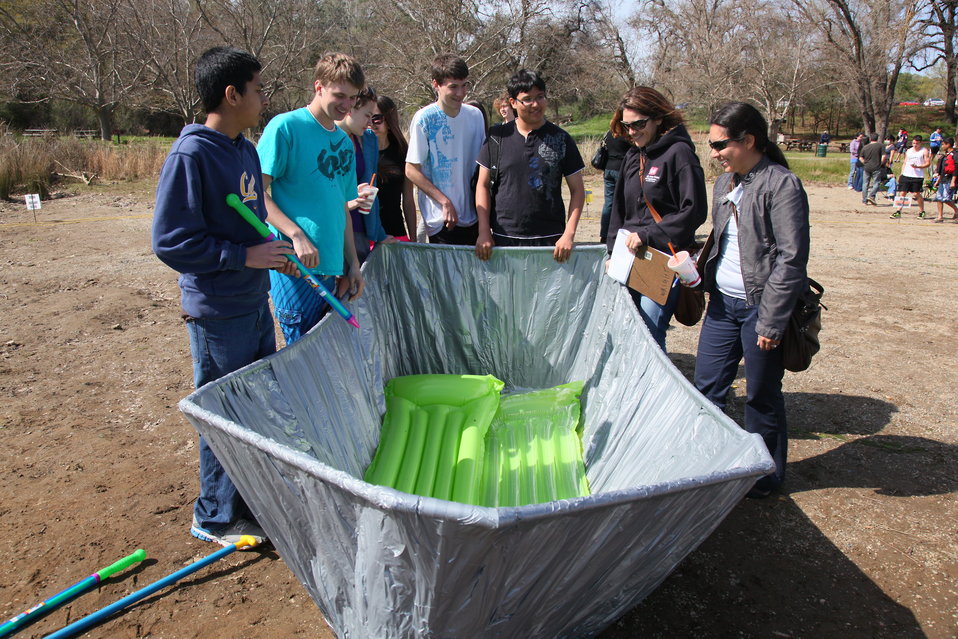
Judging boat regatta entrants for design and construction

Fiorella Fuentes (right) and Zeffy Ruvalcaba (second from right) of the U.S. Army Corps of Engineers Sacramento District look at the inner workings of a boat with students at the 5th Annual Folsom High School Boat Regatta competition at Lake Natoma in Folsom, Calif., March 23, 2012. Ruvalcaba and Fuentes, along with Arianna Raymundo, helped judge boats designed and built by the students for their science class project. The students were judged on their designs and construction, and put their boats to the test in drag and slalom races on the lake.